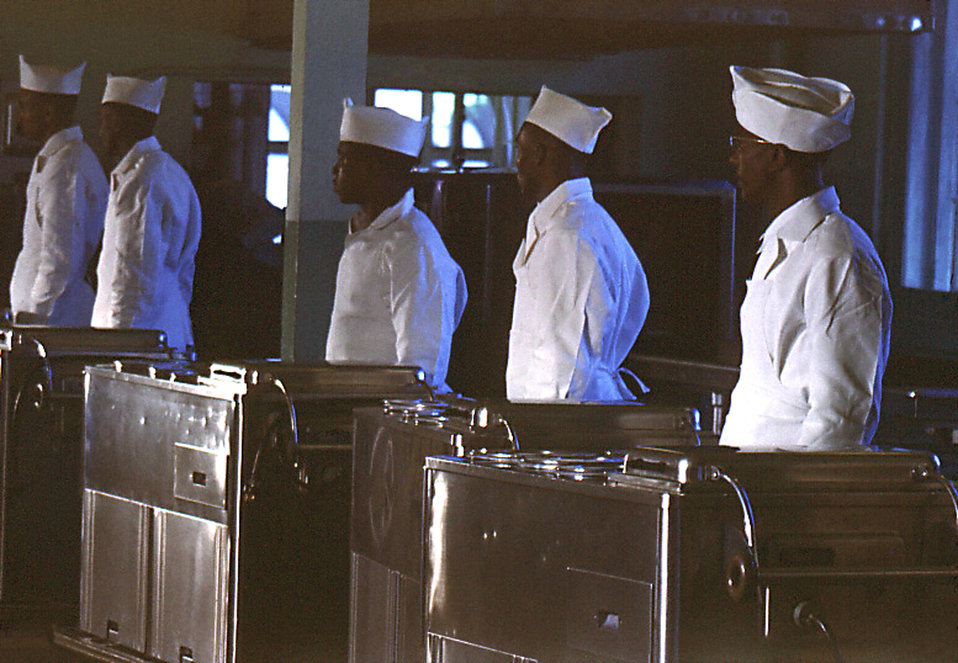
This historic image depicted a number of the Carville, Louisiana Leprosarium's cafeteria staff as they were standing aside the food carts, which were used to transport prepared meals to the hospital's blind patients, who were housed in the their own living quarters. Food carts were also used to transport meals to those patients in the hospital's infirmary, too ill to take their meals in the cafeteria's dining room.